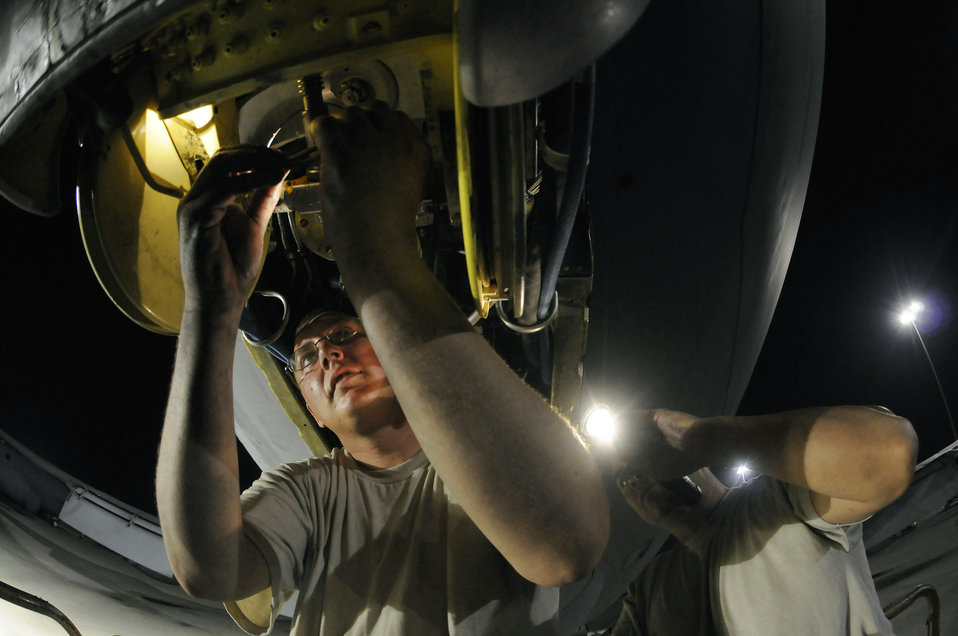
Night light

Tech. Sgt. Matthew Massey holds a flashlight while Staff Sgt. Joshua Gill reseals a slide gland of a KC-135 Stratotanker boom Oct. 27 at an air base in Southwest Asia. The KC-135 provides aerial refueling support to Air Force Navy, Marine Corps and Sergeant Massey, a native of Wichita, Kan., and Sergeant Gill, a native of Fonda, N.Y., are both hydraulic technicians assigned to the 379th Expeditionary Aircraft Maintenance Squadron. They are deployed from McConnell Air Force Base, Kan., in support of operations Iraqi Freedom and Enduring Freedom and Joint Task Force-Horn of Africa.